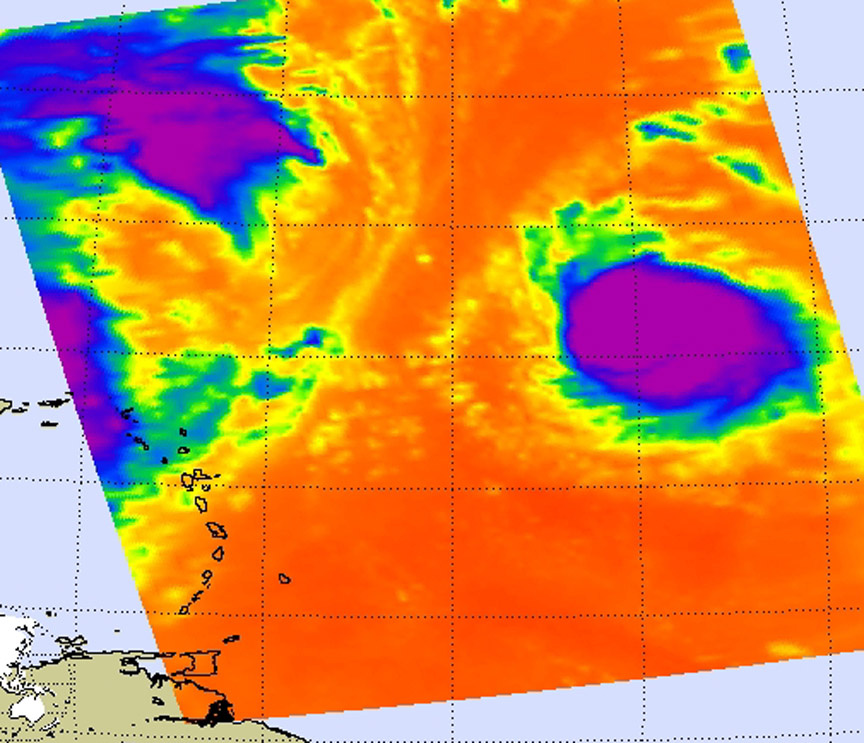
NASA's Aqua Satellite Sees Cloud Temperatures